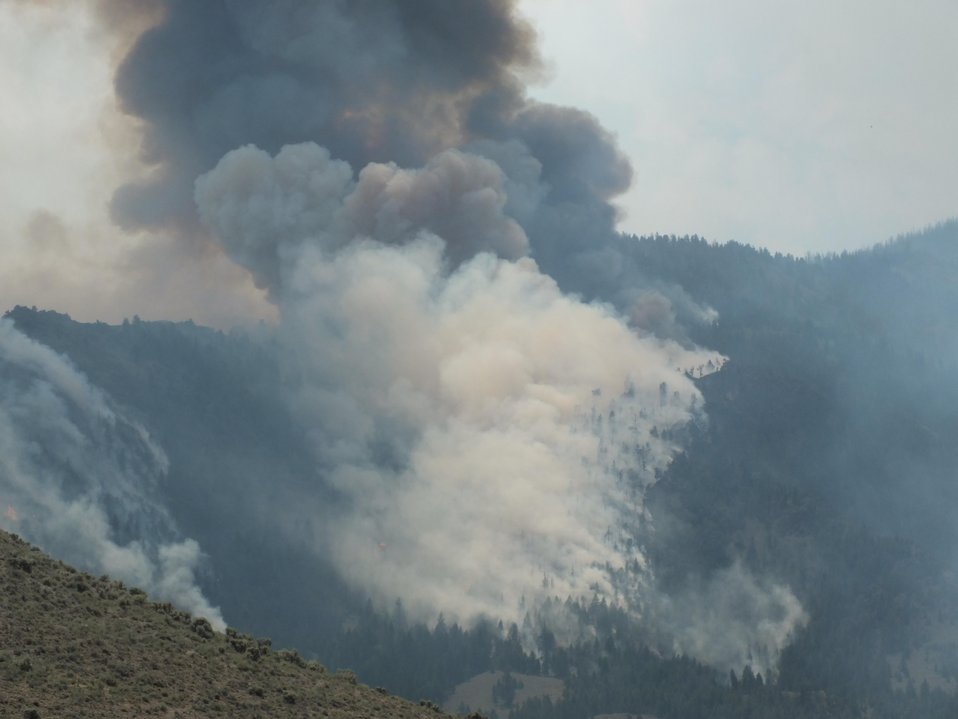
The Lodgepole Fire in the Salmon-Challis National Forest near Challis, ID began on Jul. 20, 2013 by lightning has consumed approximately 20,325 acres and is approximately 40% contained.